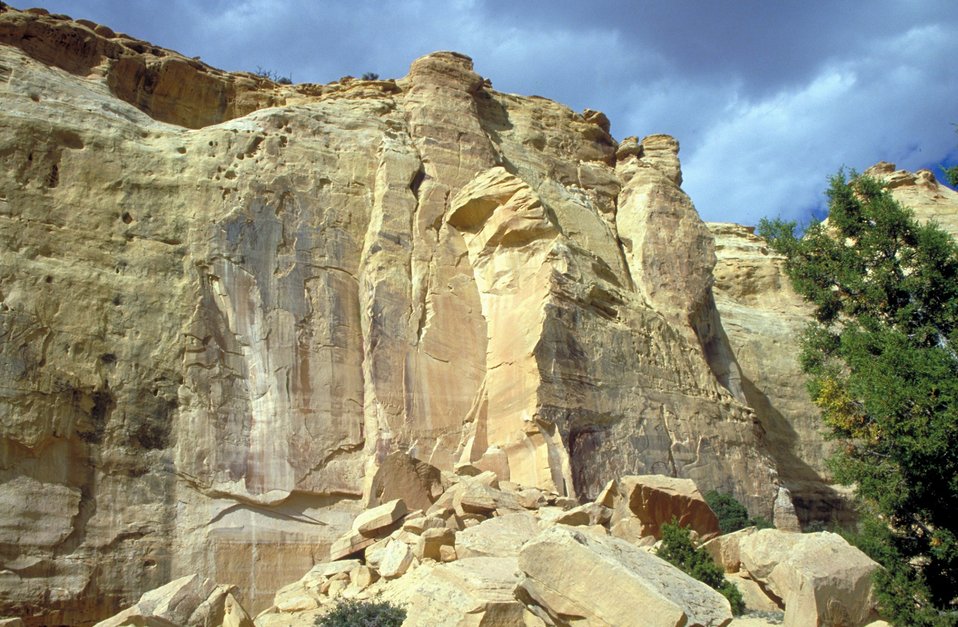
Head of Sinbad, San Rafael Swell